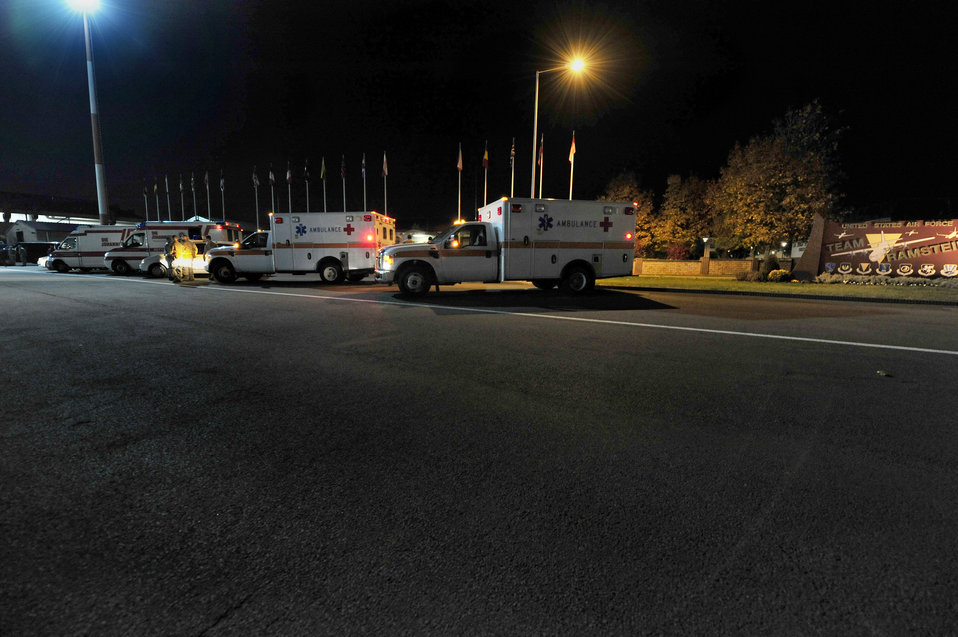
Airmen aid wounded Libyan fighters

Ambulance crews from the 86th Airlift Wing and local German hospitals stand ready to unload wounded Libyan fighters from a C-130J Hercules Oct. 29, 2011, at Ramstein Air Base, Germany. The U.S. military transported four wounded Libyans for treatment in medical facilities in Europe and 28 to facilities in the United States.